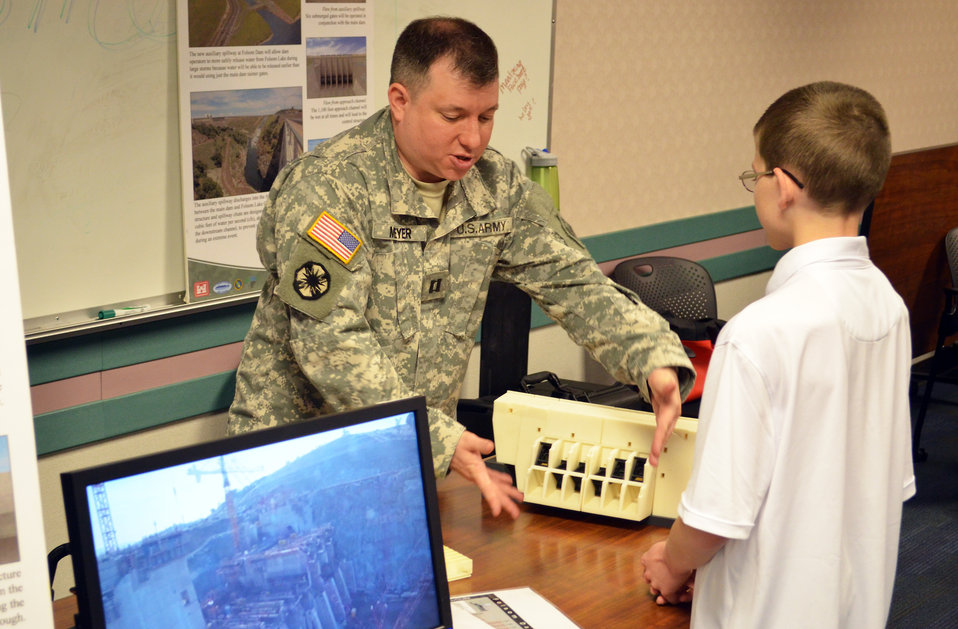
Bring Your Child to Work Day teaches kids about science, technology

Capt. Michael Meyer, a public affairs officer with the U.S. Army Corps of Engineers Sacramento District, explains the Folsom Dam auxiliary spillway construction project during the “Bring Your Child to Work Day” event April 24, 2014, at district headquarters in Sacramento, Calif. The district hosted the event to encourage kids to pursue careers in science, technology, engineering and mathematics, or STEM.